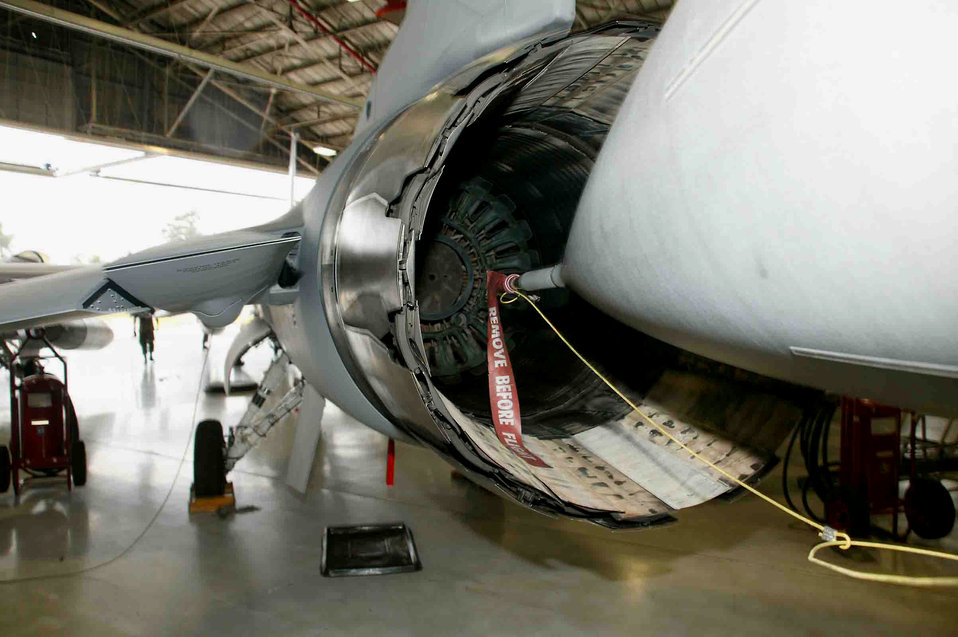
Packed

Maintainers packed F-16 Fighting Falcons from the 77th, 79th and 55th Fighter Squadrons into a hangar at Shaw Air Force Base, S.C., to protect them from Tropical Storm Ernesto. They were packed so tightly the noses of F-16s were entering the exhausts of other F-16s.